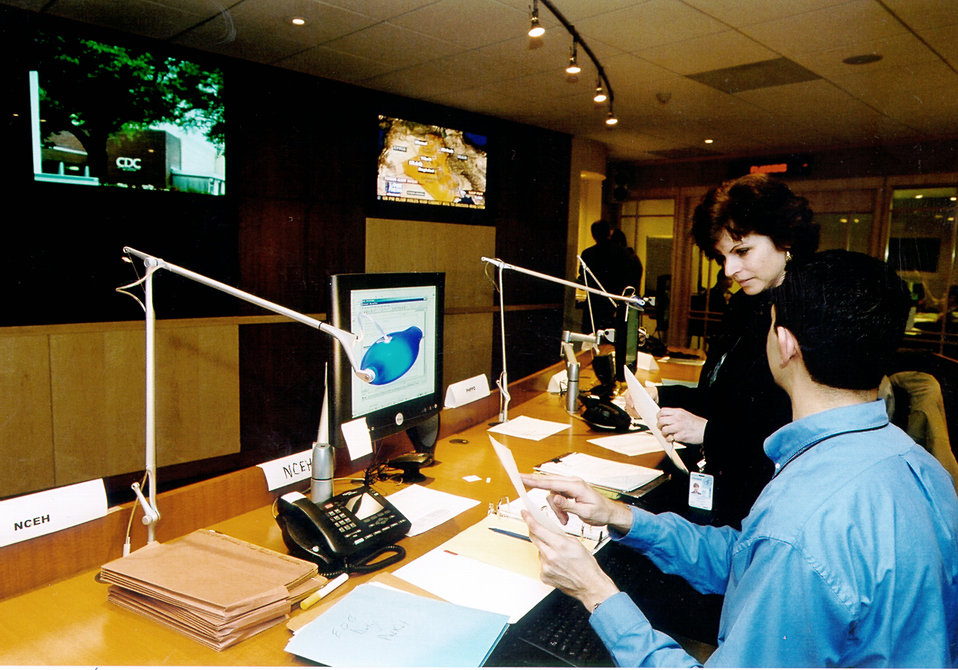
This image of Cyndi Schaffer was taken from inside CDC's new Emergency Operations Center (EOC).